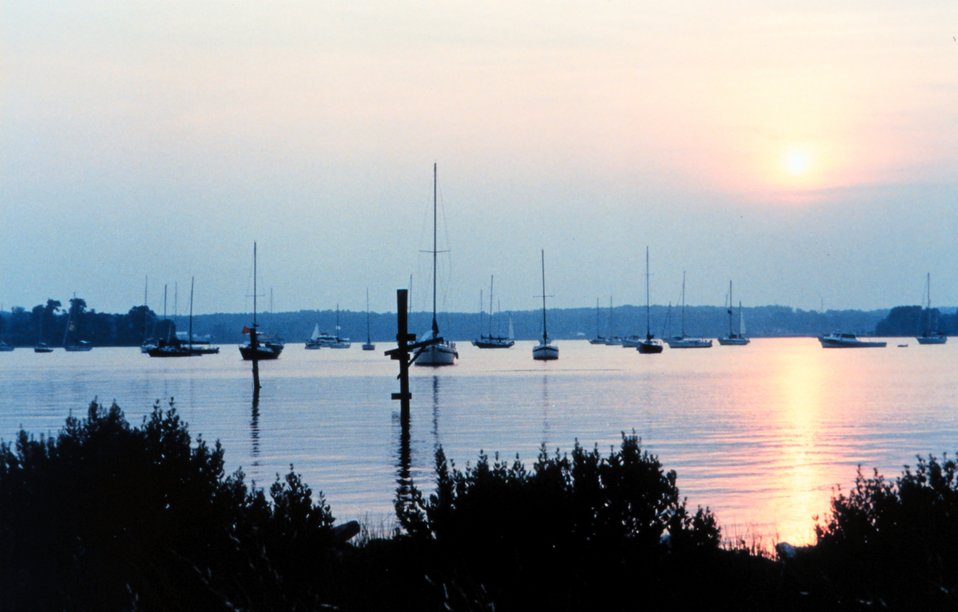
Sun setting over the St. Mary's River after the 1999 Governor's Cup sailboat race.